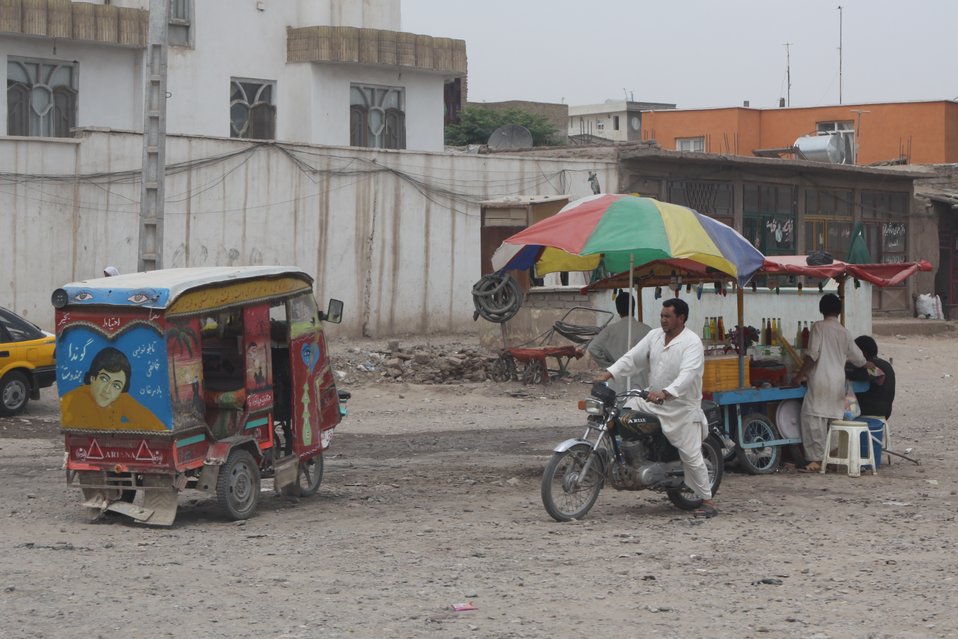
100525 Hirat Marble Conference 576